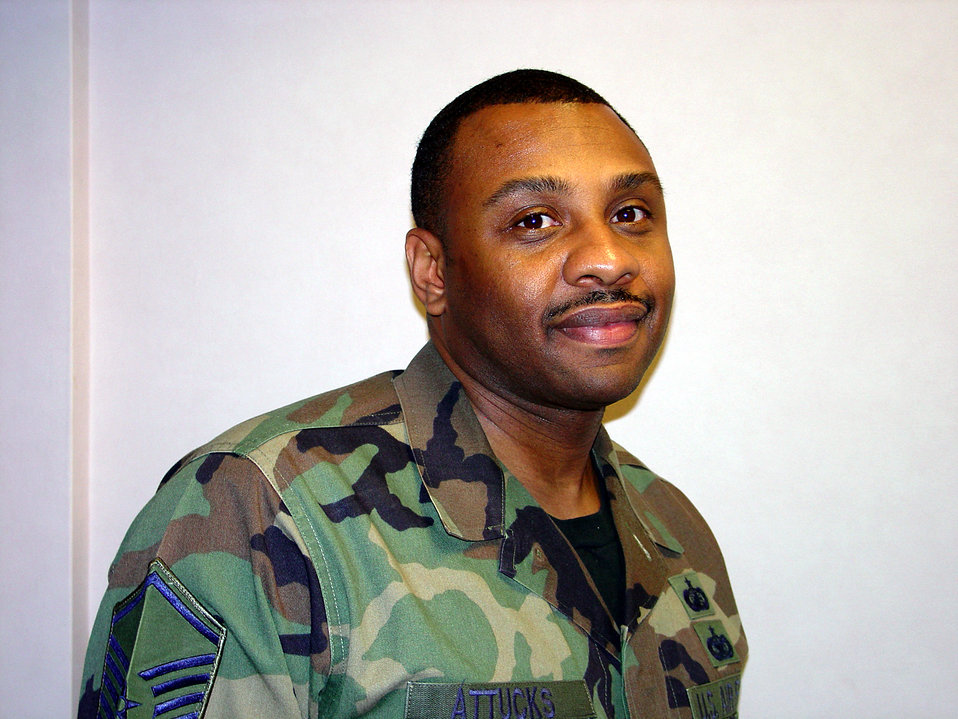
Keeping tradition

MCGUIRE AIR FORCE BASE, N.J. -- Master Sgt. Mark Attucks is a fifth generation descendent of Crispus Attucks, who was the first American martyr to die during the Boston Massacre, a pre-Revolutionary War event. Sergeant Attucks is a financial analyst with the 305th Comptroller Squadron here.